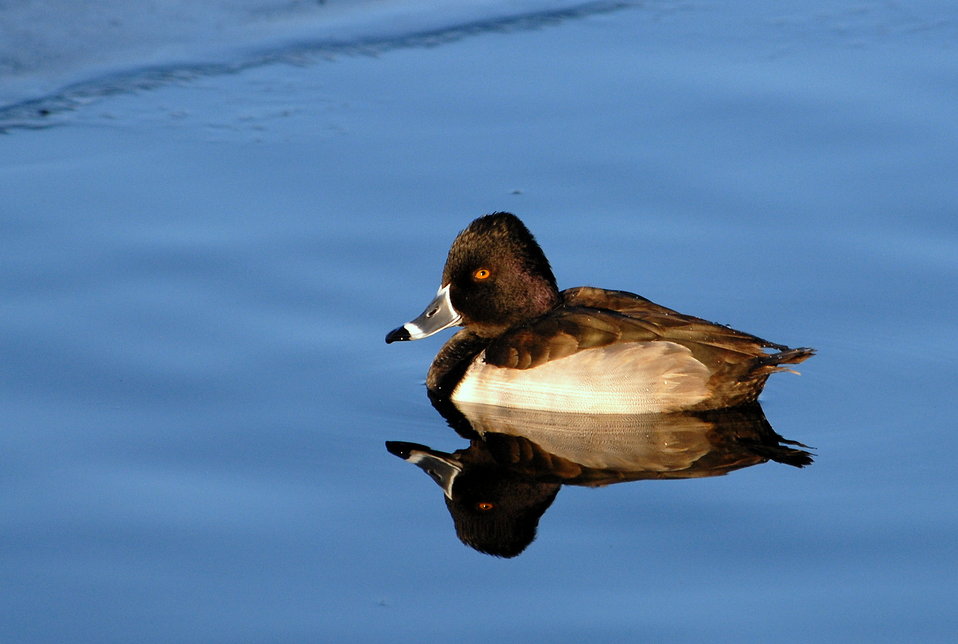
Ring-necked Duck (male)